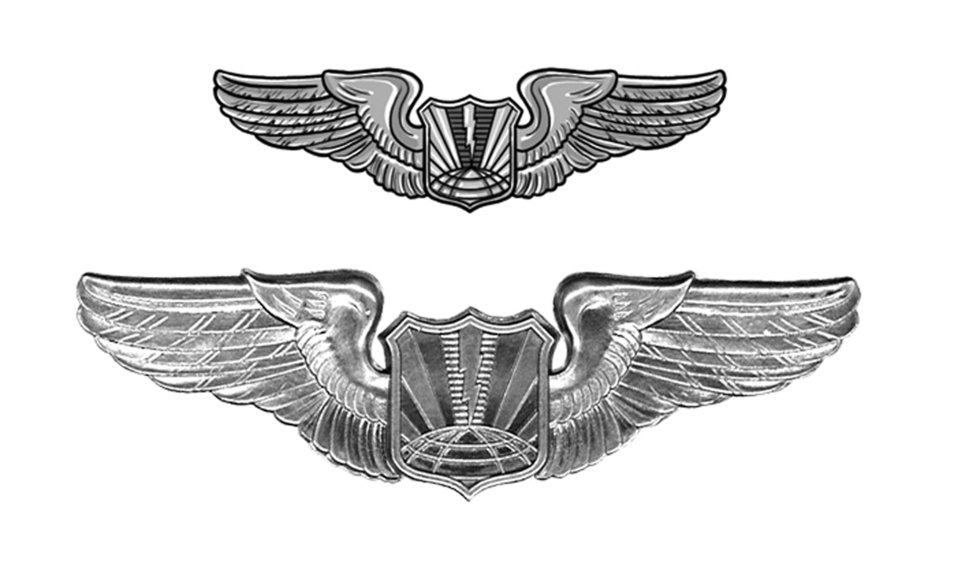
UAS wings

These wings, recently approved by Air Force Chief of Staff Gen. Norton Schwartz, are worn by unmanned aircraft operators who have not attended undergraduate pilot training. The wings were presented to the graduates of first Beta class during a ceremony at Creech Air Force Base, Nev., Sept. 25, 2009. The wings were designed by Staff Sgt. Austin May, a public affairs craftsman from the 100th Air Refueling Wing, Royal Air Force Mildenhall, England.